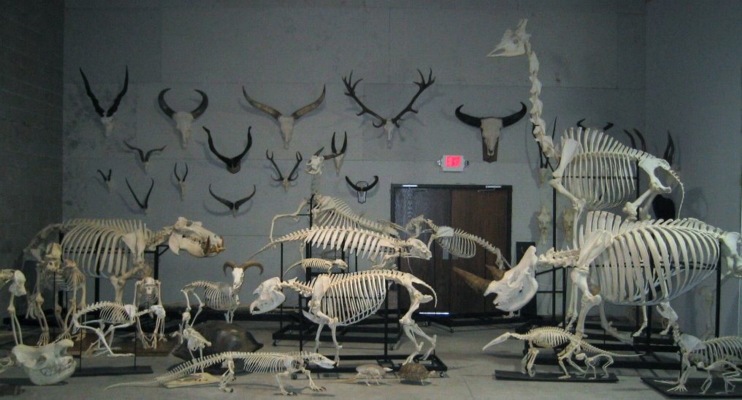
Skeletons in storage until The Museum of Osteology is completed. by Joey Williams